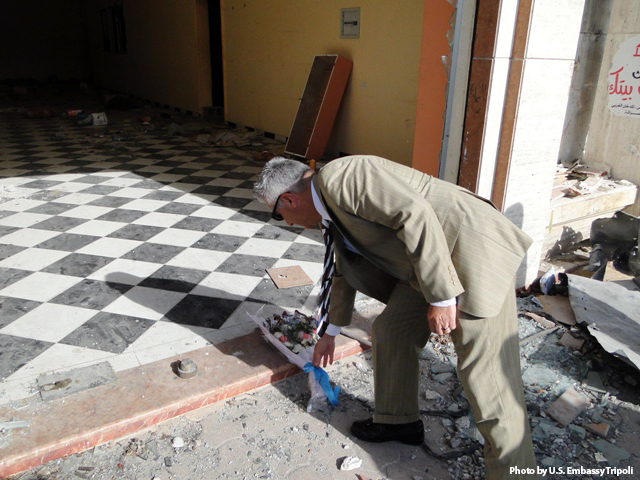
Ambassador Cretz Leaves Flowers at the Place Where American Photographer Hondros Was Fatally Wounded

U.S. Ambassador to Libya Gene Cretz leaves flowers at the place where American photographer Chris Hondros was fatally wounded by Qadhafi regime shelling in April 2011 in Misurata, Libya, on November 26, 2011.